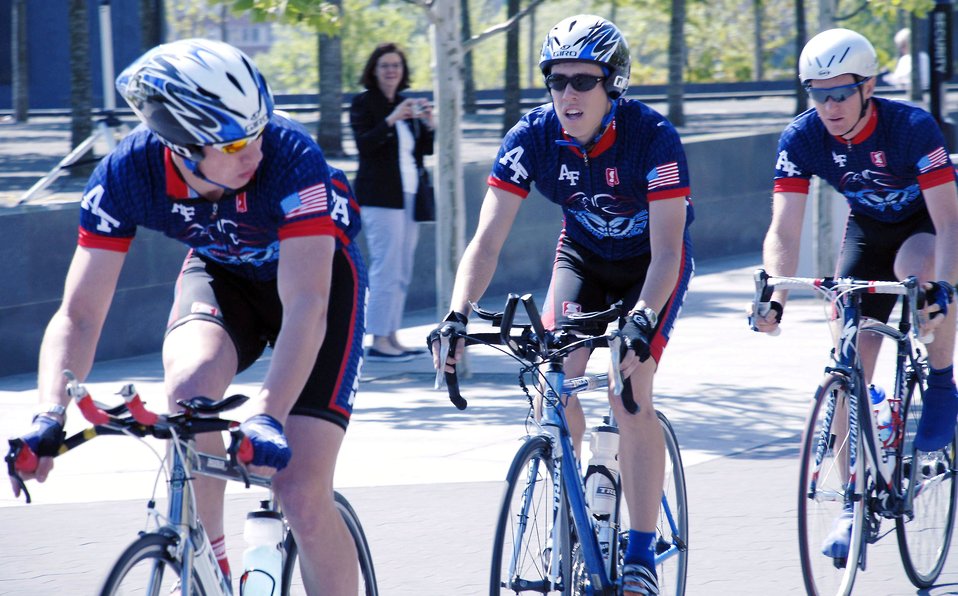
Air Force participates in pro cycling event

Members of the U.S. Air Force Academy collegiate cycling team compete in the Team Time Trial event for two laps of the 12.5 kilometer course during the U.S. Air Force Cycling Classic held May 4 in Arlington, Va. Proceeds from the event, which featured both amateur and professional cyclists, will benefit U.S. military members who suffer from traumatic brain injuries.